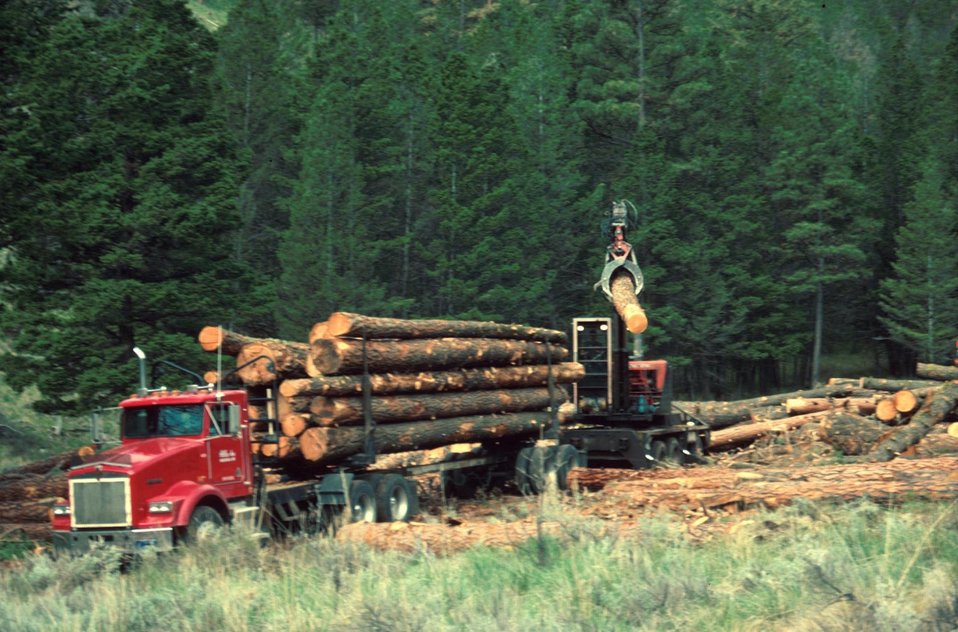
Logging Upper Blackfoot Salvage Upper Snake River District